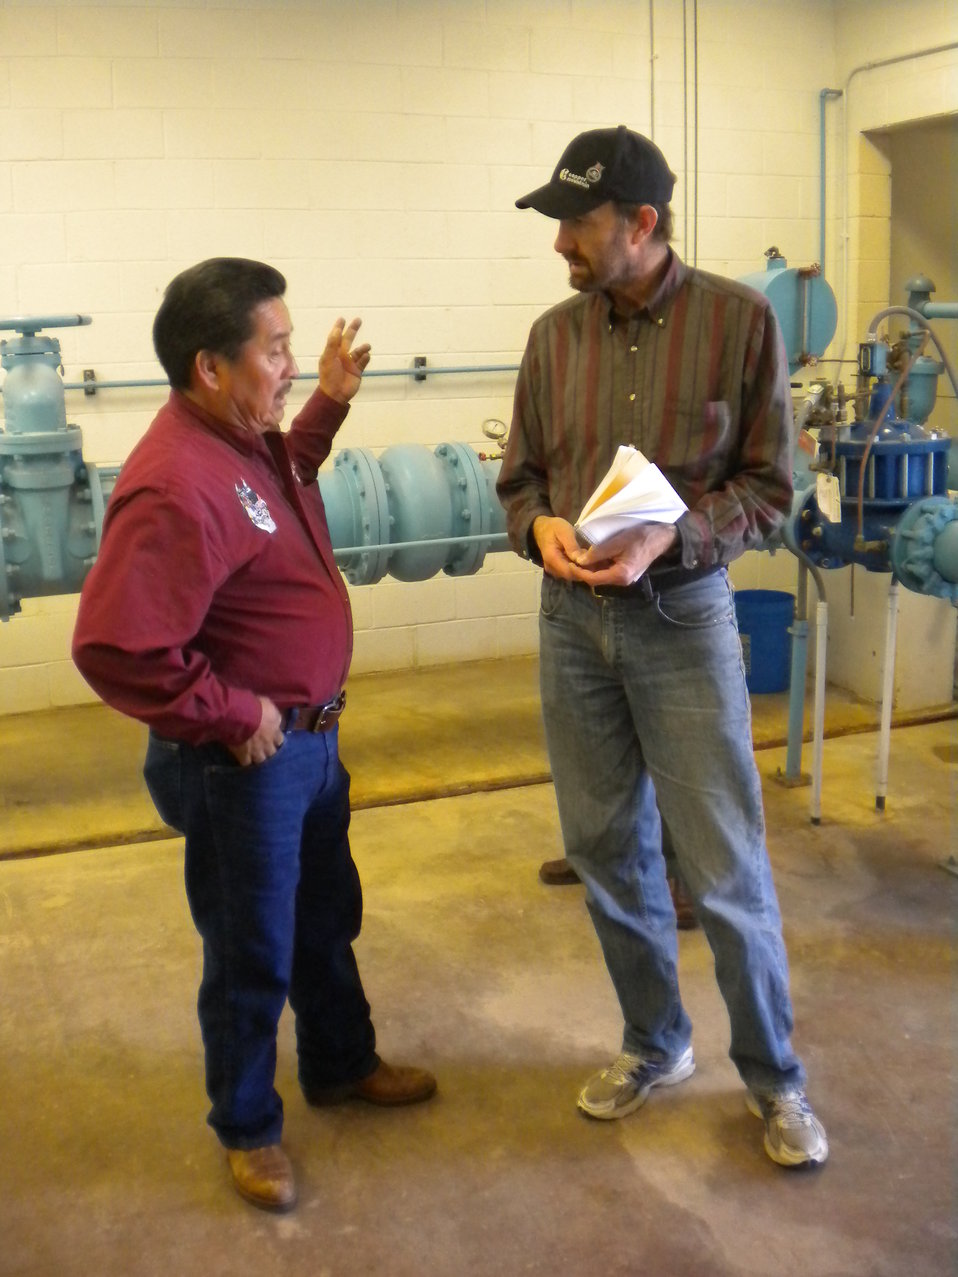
Office of Indian Energy START Team Site Visit of the Zuni Pueblo in New Mexico

During an Office of Indian Energy Strategic Technical Assistance Response Team (START) site visit of the Zuni Pueblo in New Mexico, NREL's Otto VanGeet (right) discusses the layout of the site's water well with Strallie Edaakie Sr. of the Zuni Utility Department.